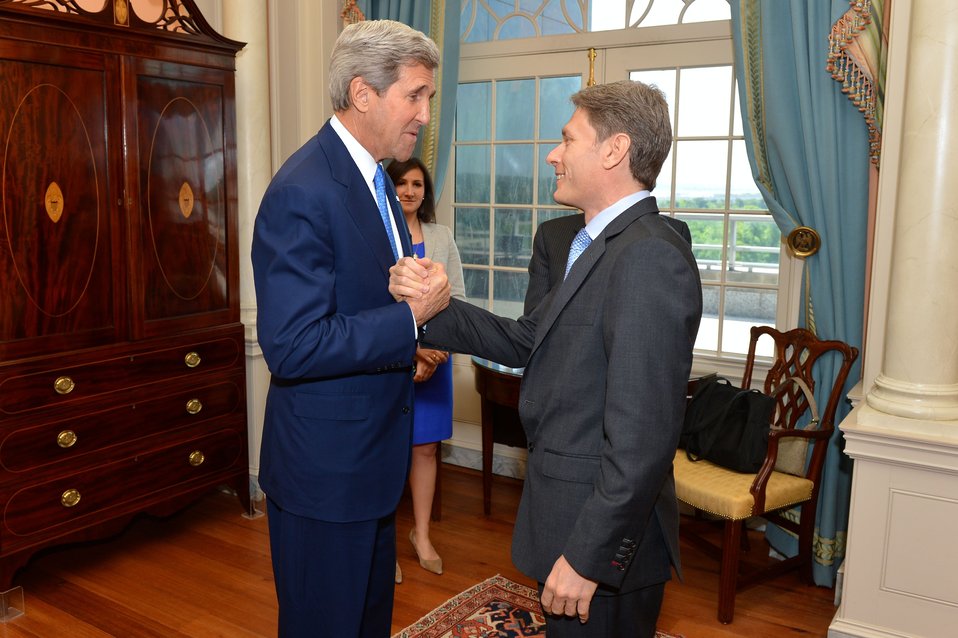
Secretary Kerry Greets Assistant Secretary Malinowski

U.S. Secretary of State John Kerry greets Assistant Secretary for Democracy, Human Rights, and Labor Tom Malinowski before his swearing-in ceremony at the U.S. Department of State in Washington, D.C., on May 13, 2014.